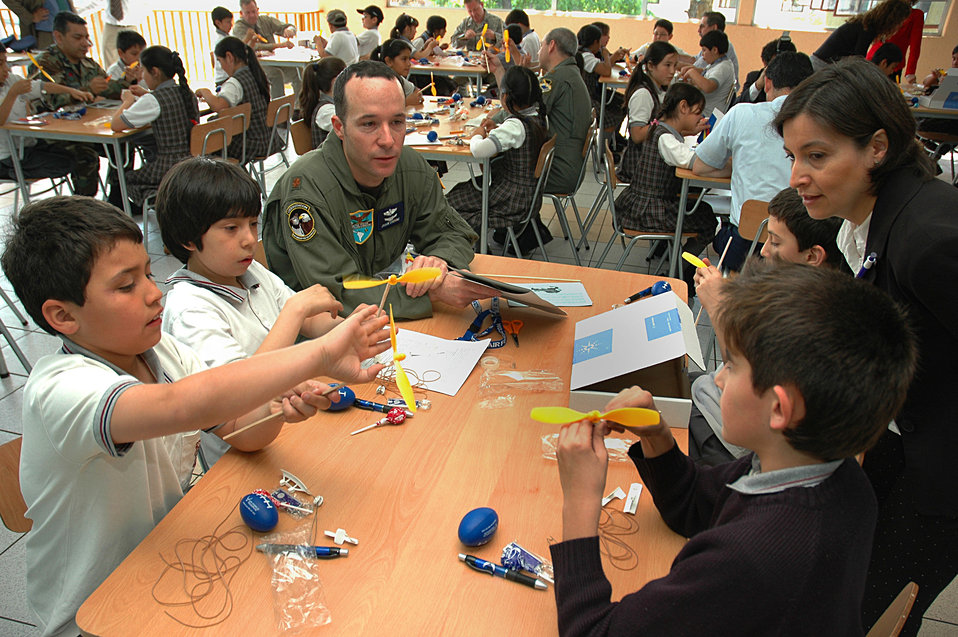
Airmen, Chilean school 'partner' to teach children aviation

Maj. Jason Couisine, the Air Force section chief at the U.S. Military Group in Chile, assists a group of students at the Complejo Educacional Esperanza School in Santiago, Chile, during a community outreach event on Oct. 27. The model airplane kits were donated by a Silicon Valley technology company for use with Operation Southern Partner, an Air Forces Southern-led exchange aimed at providing intensive, periodic subject matter exchanges with partner nations in the U.S. Southern Command area of focus. Included in the exchange is visits like this one where Airmen partnered with local U.S. Embassy volunteers, Chilean air force officers, members of the U.S. Military Group and volunteers from Agilent Technologies to teach children about the practical applications of the sciences.